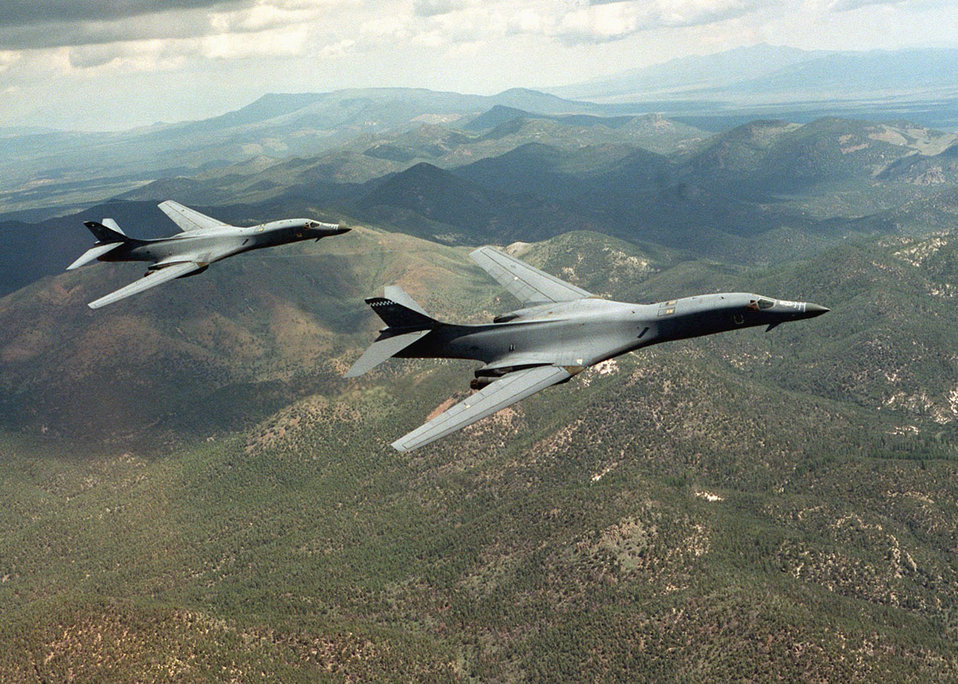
B-1B

The B-1B is a long-range strategic bomber, capable of flying intercontinental missions without refueling, then penetrating present and future sophisticated enemy defenses. It can perform a variety of missions, including that of a conventional weapons carrier for theater operations. The B-1B's electronic jamming equipment, infrared countermeasures, radar location and warning systems complement its low-radar cross-section and form an integrated defense system for the aircraft. The swing-wing design and turbofan engines not only provide greater range and high speed at low levels but they also enhance the bomber's survivability. Wing sweep at the full-forward position allows a short takeoff roll and a fast base-escape profile for airfields under attack. Once airborne, the wings are positioned for maximum cruise distance or high-speed penetration.